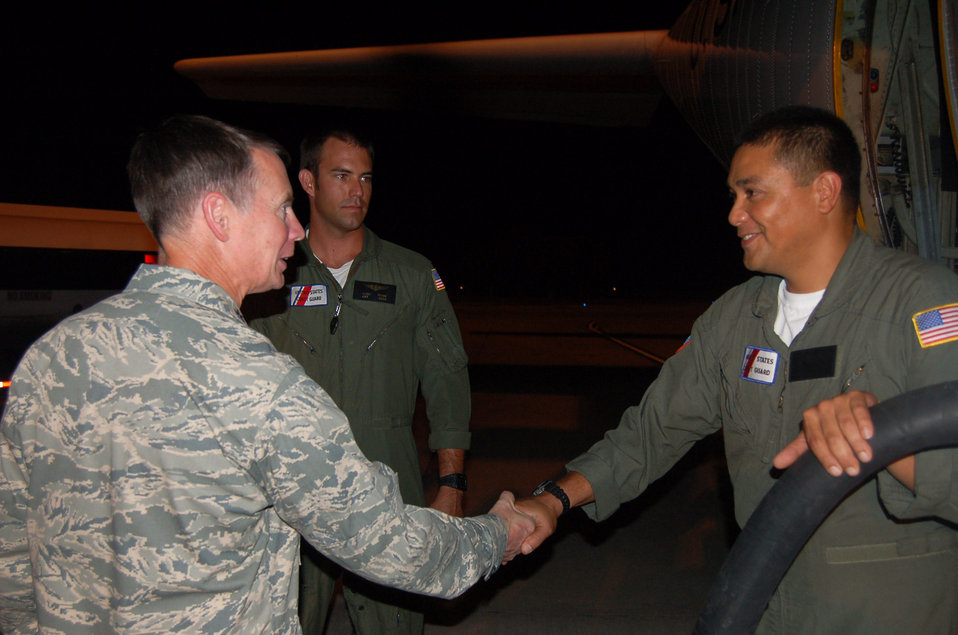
Southern Command, AF South Leadership visit deployed troops

Lt. Gen. Glenn Spears thanks Petty Officer Shane Ramos, a Coast Guard C-130 loadmaster, for his work Dec. 8 at Forward Operating Location Comalapa, El Salvador. General Spears is the the U.S. Southern Command deputy commander.